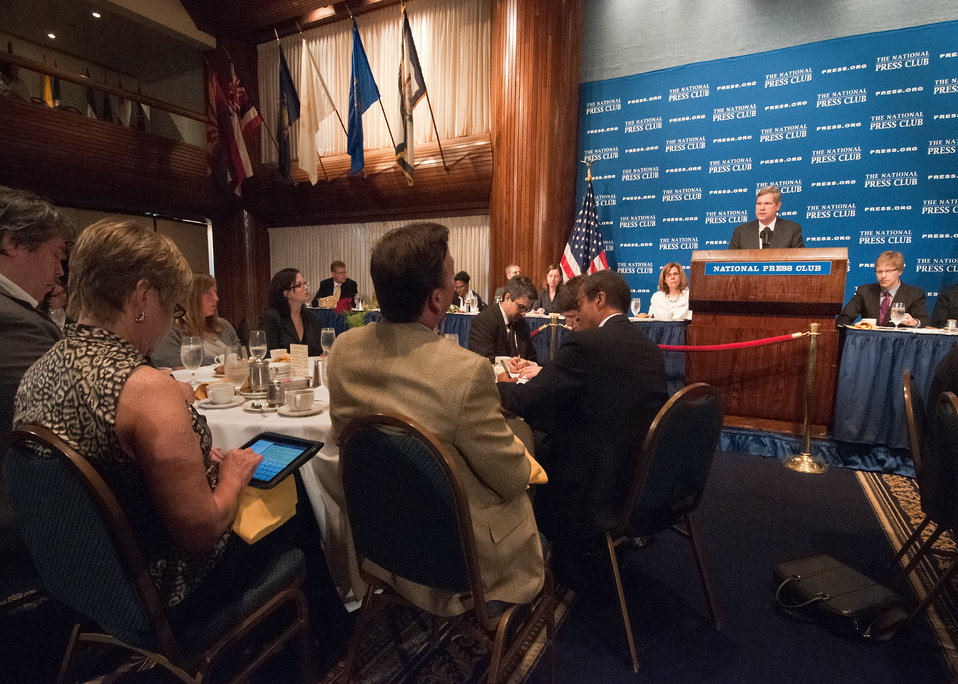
Agriculture Secretary Tom Vilsack spoke to journalists and national agriculture leaders about Innovation in American Agriculture, Sustainable Solutions to Help Feed the World at the National Press Club in Washington, DC, Monday, June 13, 2011 prior to attending the G20 Summit in France with global agriculture leaders. Secretary Vilsack mentioned in his speech, 'As we look to the future, this challenge grows even more stark. The global population is on the rise and strong economic growth in developing countries is expanding middle classes and increasing demand for agricultural products. We will have to increase food production by 70 per cent to feed a larger, richer global population of 9.3 billion by 2050. What's more, agriculture will play a role in meeting the growing demand for energy – which is expected to increase by more than 40% by 2035.”